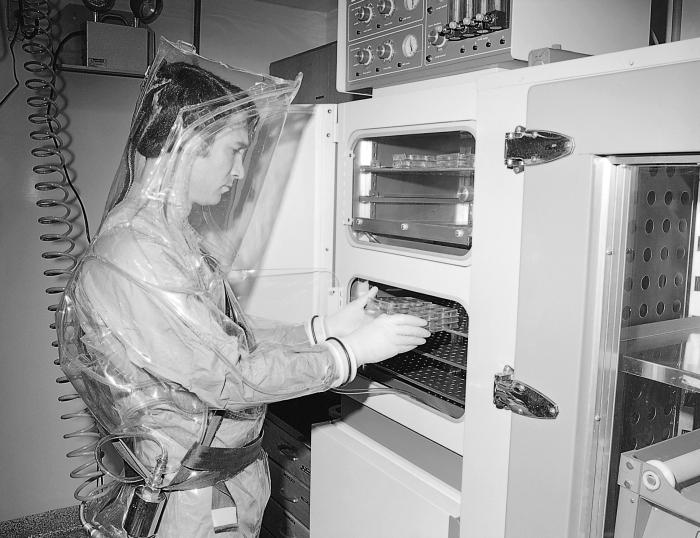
This 1978 photograph depicted Dr. J.V. Lange at a CO2 incubator that was located inside one of the CDC's early Containment Laboratories, also known as BSL environments.